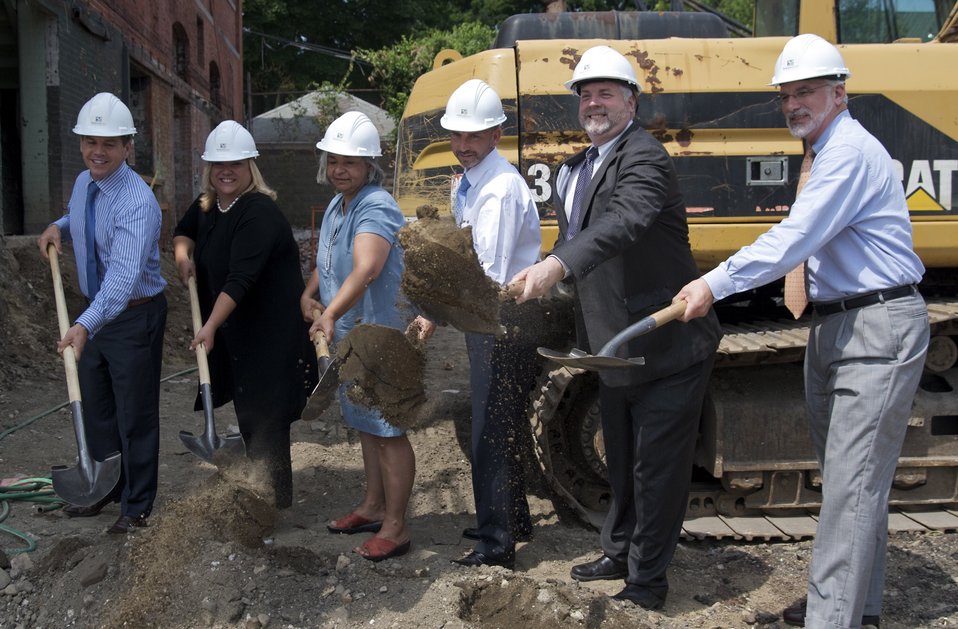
RI Ground Breaking 6/28/10

Providence Mayor David Cicilline, Chairwoman, of the Housing Resource Commission Jeanne Cola, Executive Director of OpenDoors Sol Rodriguez, Assistant Secretary Dan Tangherlini, Director of Rhode Island Department of Corrections A.T. Wall, and Executive Director of Rhode Island Housing Richard Godfrey officially breaking ground to kick-off construction.